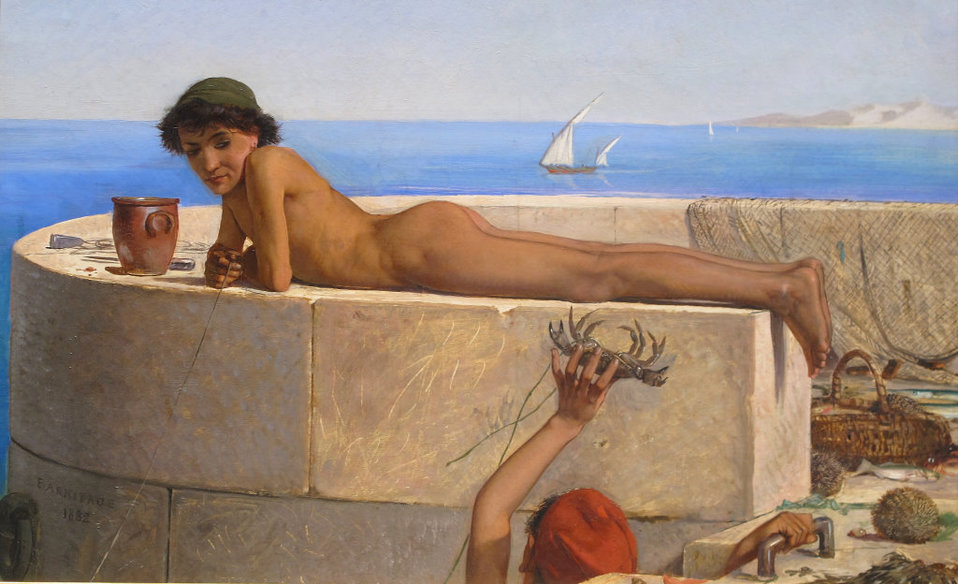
'Sea Urchins' by Edward Armitage (1882)